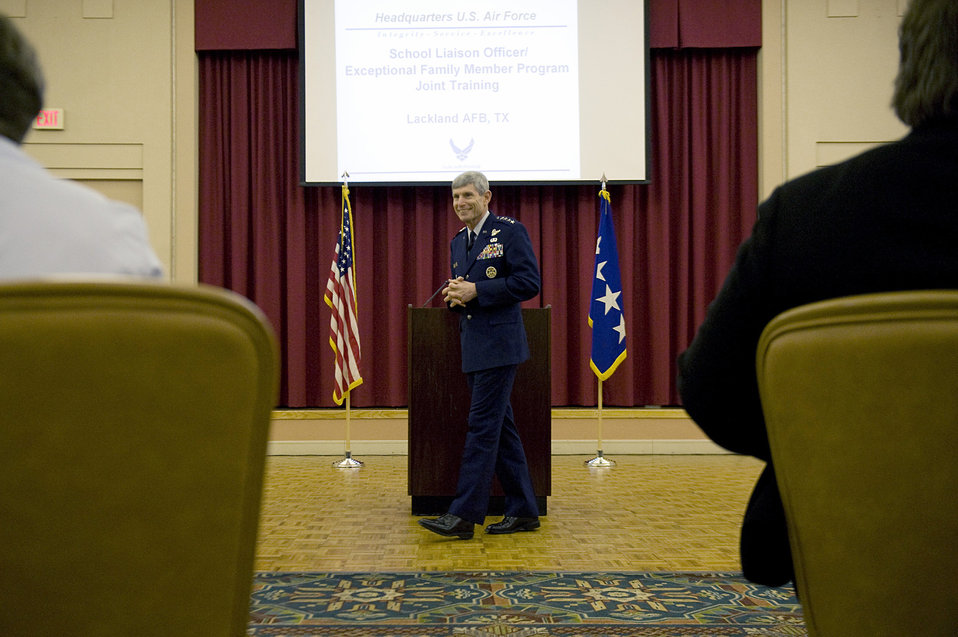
Gen Schwartz at EFMP/SLO course

Air Force Chief of Staff Gen. Norton Schwartz speaks to attendees at the Exceptional Family Member Program and School Liaison Officer training course Mar. 10, 2011, at Lackland Air Force Base, San Antonio. The two programs are geared toward taking care of families with special needs and childhood education respectively.